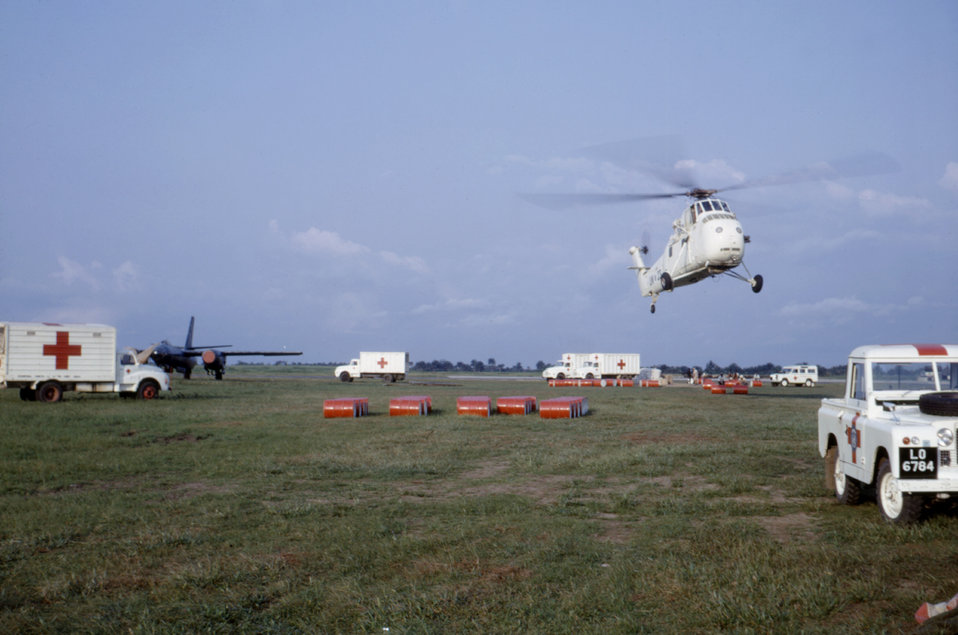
This late 1960s photograph depicts a field that had been converted into a make-shift airport in Calabar, Nigeria, where relief efforts were aided by a helicopter team. These helicopters could move one ton of crated, dry fish quickly to refugee camps in the Nigerian-Biafran war zone.